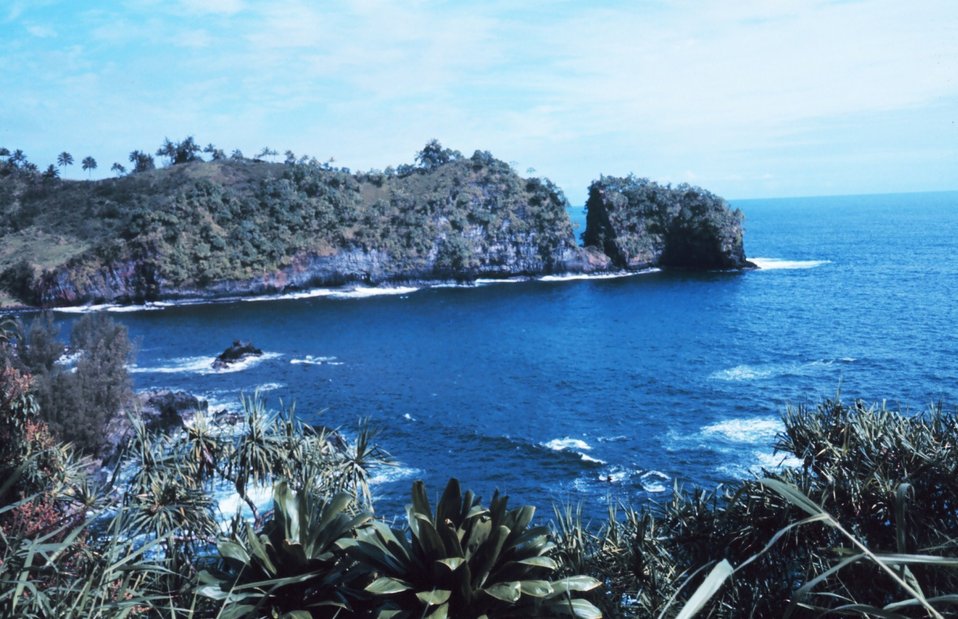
A coastal scene north of Hilo